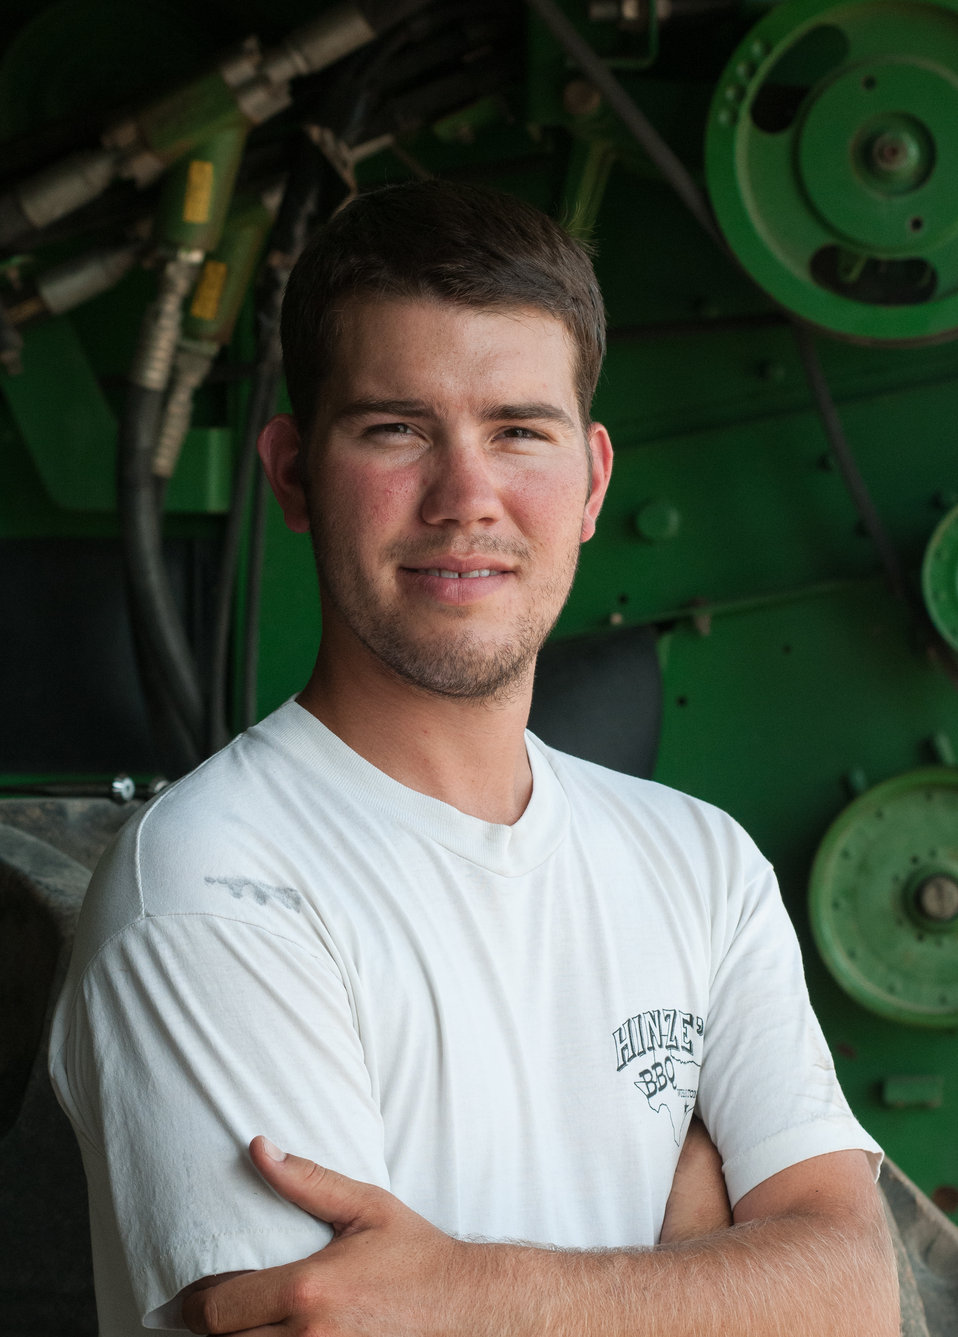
Philip Marek, a farm owner since 2010, and started with 210 acres. “I love farming and seeing the transition from seed to harvest,” professes Mr. Marek, “Everything about it!” His cousin Josh and he were able to use U.S. Department of Agriculture (USDA) small and new farmer and rancher loan programs that he learned from about from the Farm Services Agency. The programs provided him the ability to handle initial business start up costs and equipment purchase. “It’s really hard to get started, without those loans,” Marek said, and also mentions that the local Ag Extension really helps ups up out here. Since the 1900’s this land has been farmed by the Marek family.
Information about loans for small and beginning farmers and ranchers:
www.fsa.usda.gov/FSA/webapp?area=home&subject=fmlp&am...
www.fsa.usda.gov/Internet/FSA File/beginningloansoct14.pdf